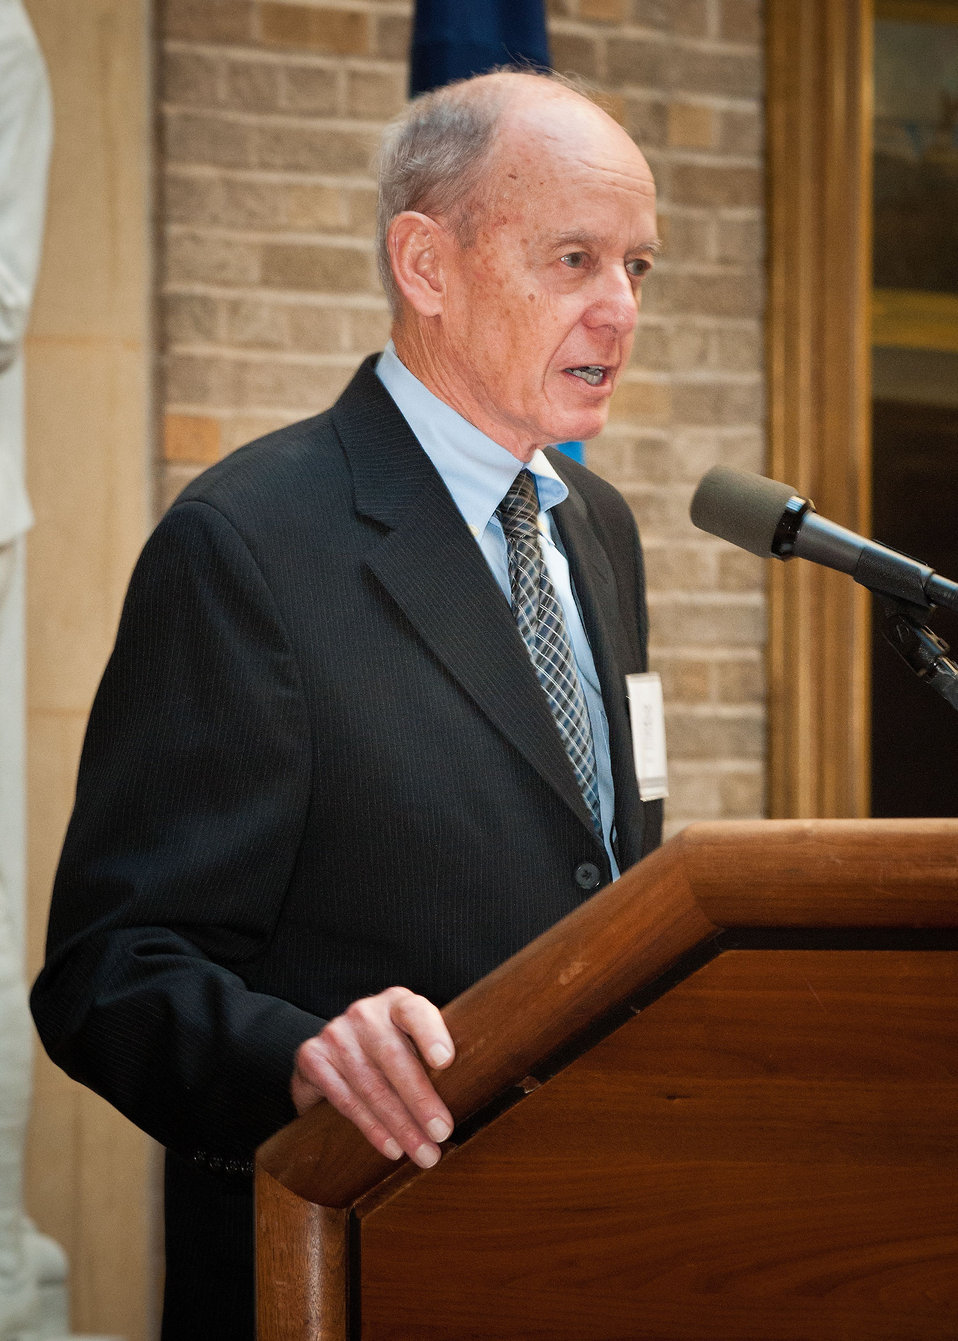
U.S. Department of Agriculture (USDA) Office of Operations (OO) Director for Business Services Morris Tate welcomes employees and guests to USDA’s Departmental Management (DM) Target Center 20th Anniversary at USDA in Washington, D.C. on Thursday, Sept. 13, 2012. The USDA Target Center has provides Assistive Technology to employees with disabilities. The Center has assisted thousands of individuals with disabilities to further contribute to the mission of USDA.